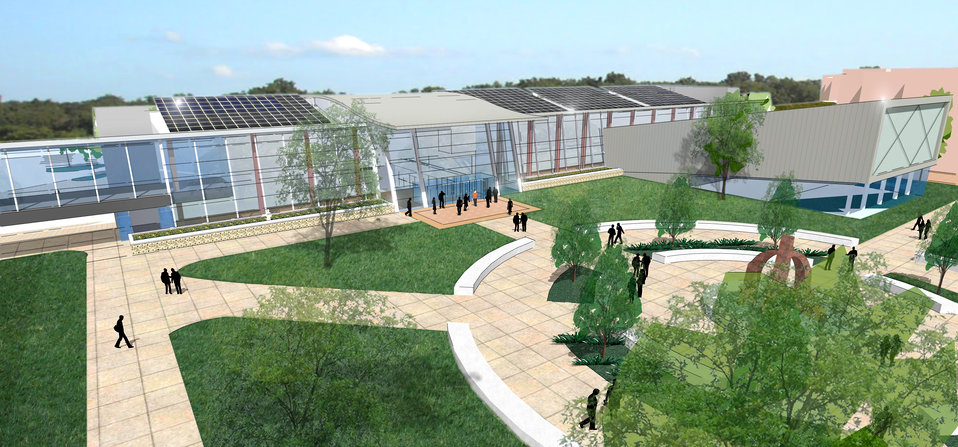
NCGP Construction Grant - Golisano Institute for Sustainability Research Building

South view of the planned Golisano institute for Sustainability at Rochester Institute of Technology.